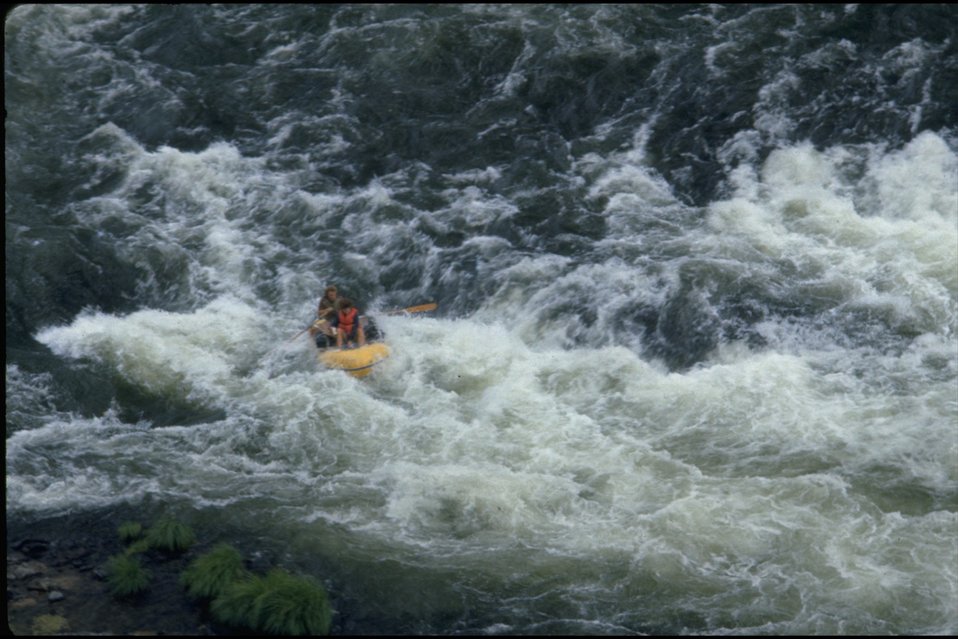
Rogue River, Tyee. Raft in Tyee Rapid, wild section.